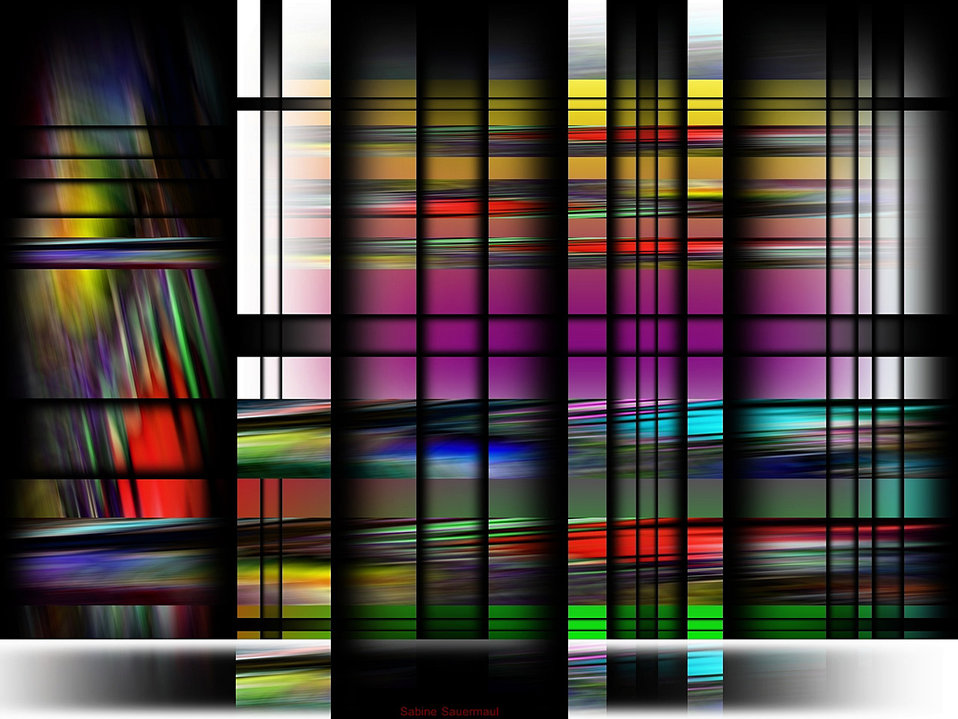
Clarity

Transparent columns.